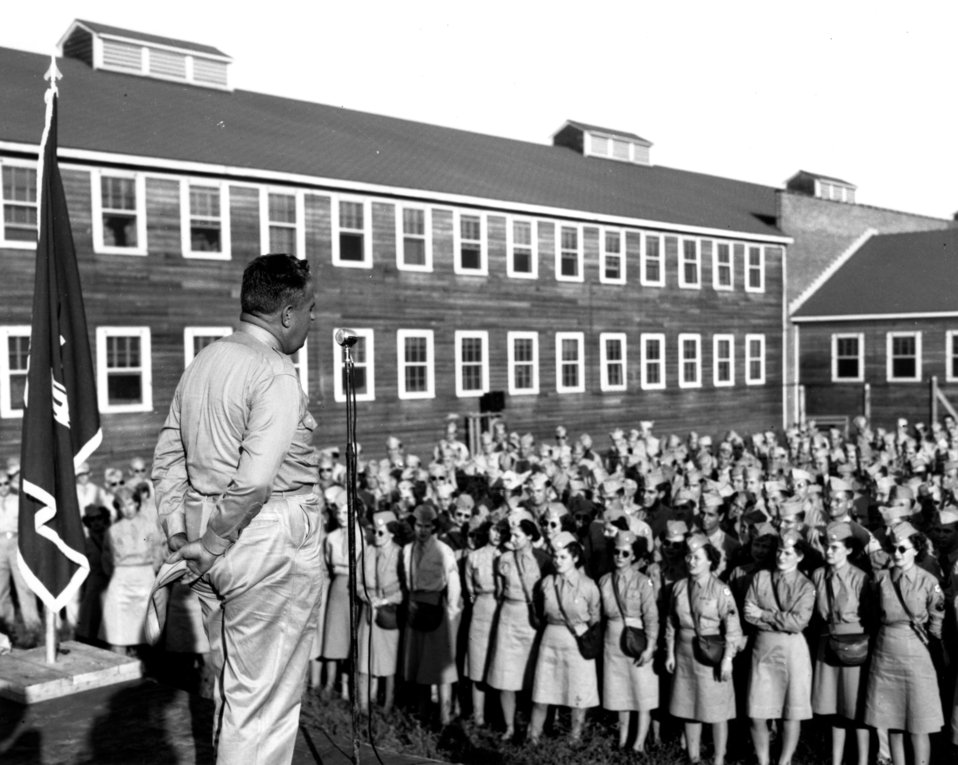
Army Activity at Oak Ridge